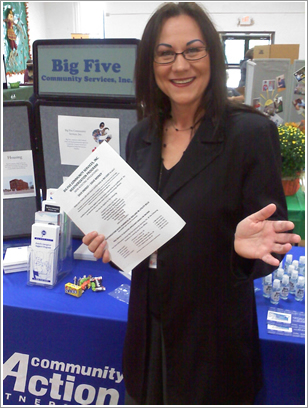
Wendy Van Zandbergen, a single mother from Durant, OK teetered on the verge of losing her house after almost nine months of unemployment. Now Wendy works as an energy education trainer for Big Five Community Services Inc., her local community action agency.